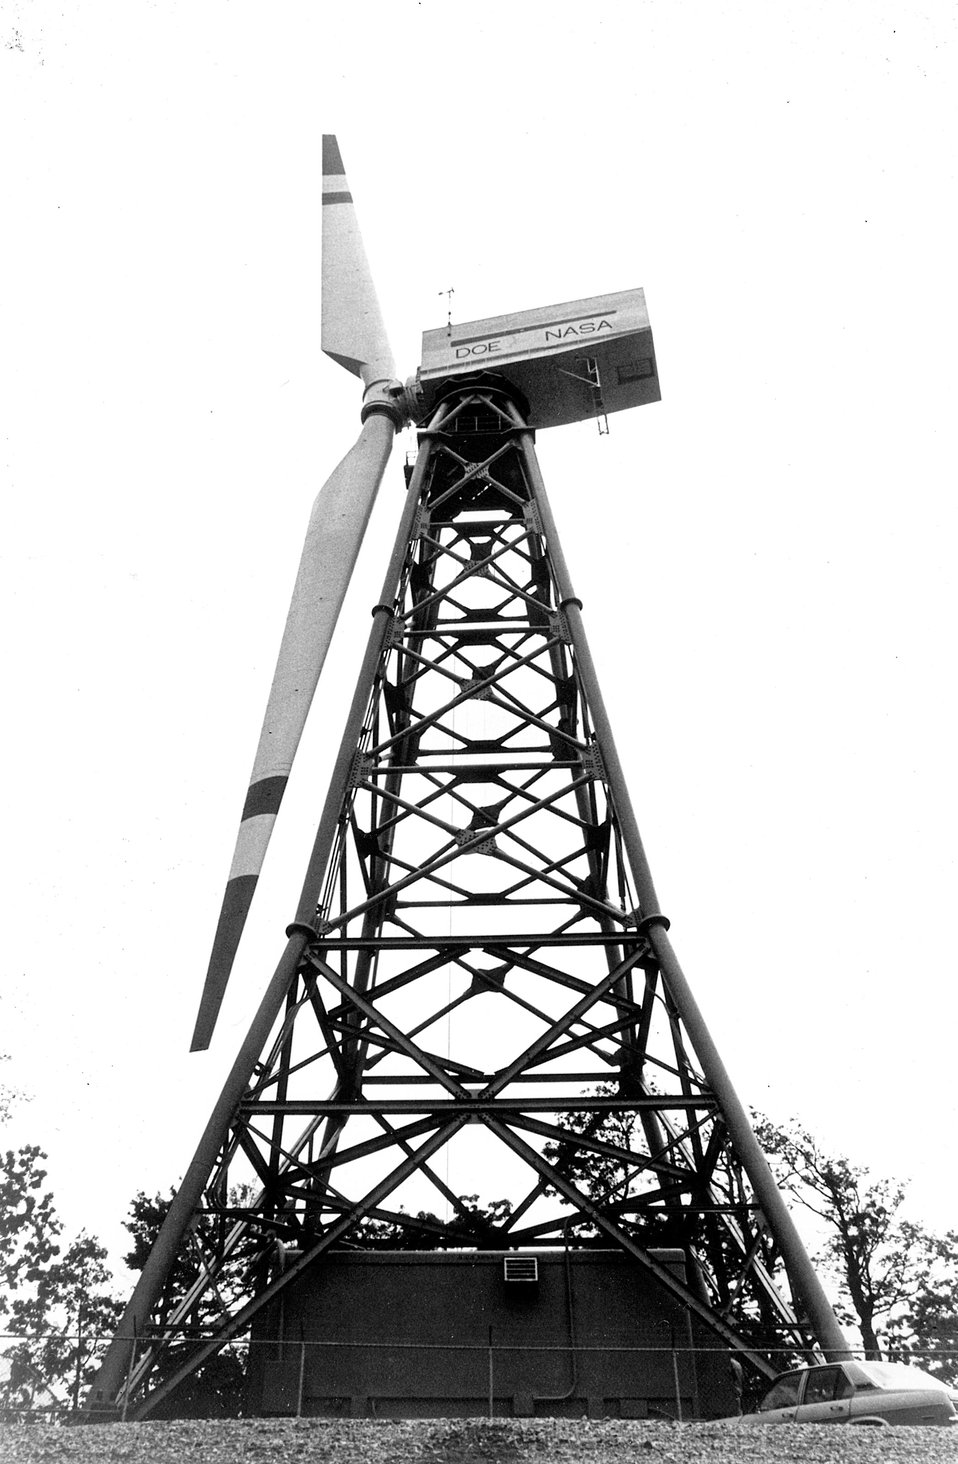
On July 11, 1979, the world's largest wind turbine generator with blades as long as the wingspan of a Boeing 707 was dedicated near Boone, North Carolina. c. 1979